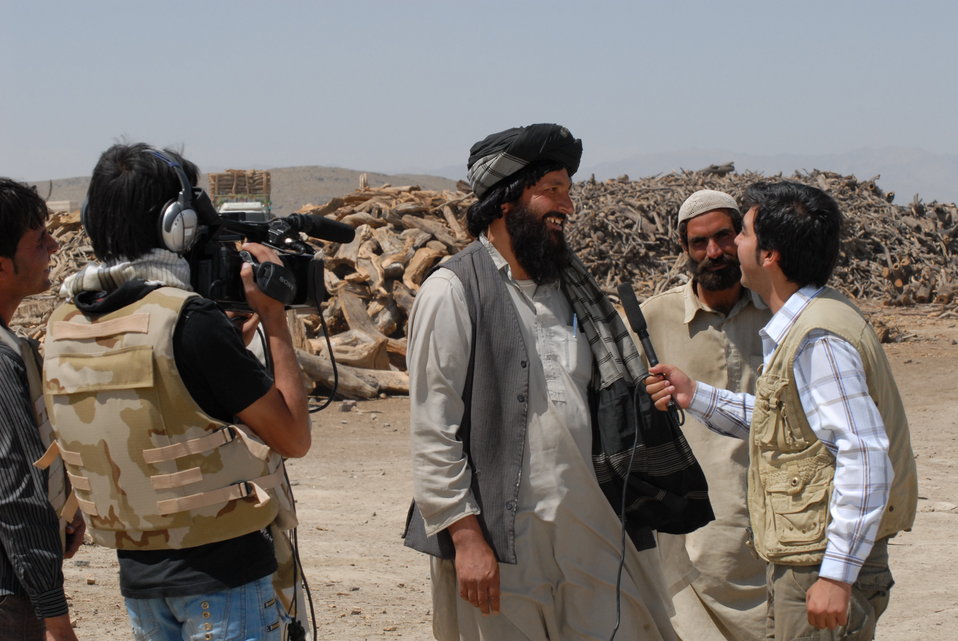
'On the Road' in Paktya Province